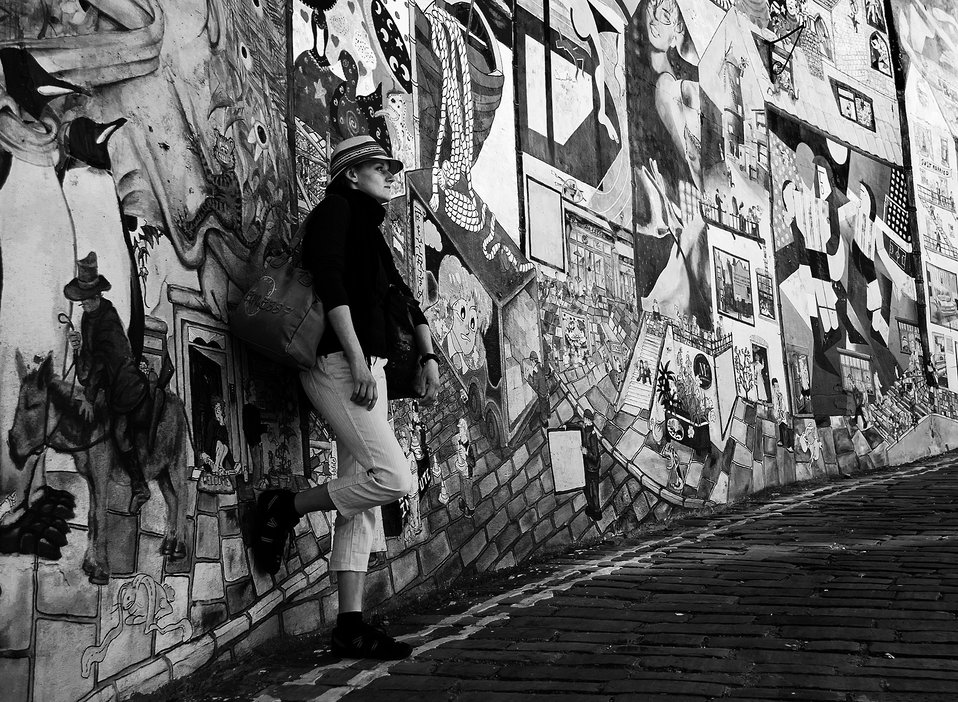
Woman and wall.